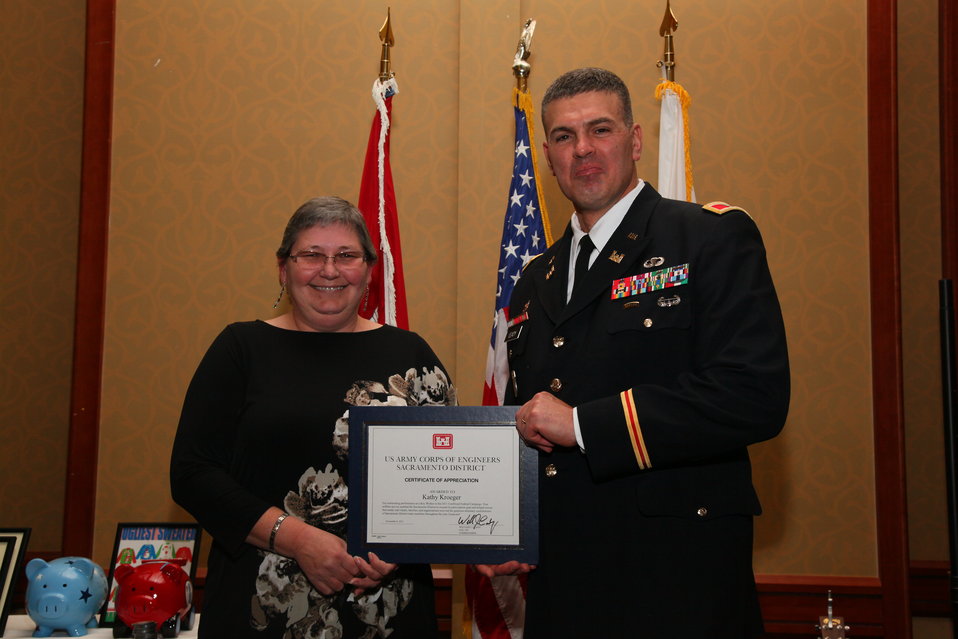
Sacramento District Holiday Party 2011